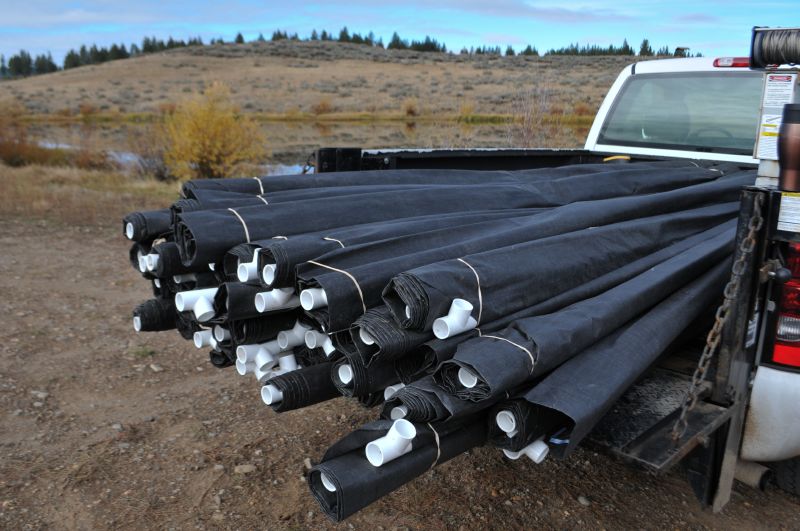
MARTIS CREEK LAKE, Calif. (Oct. 31, 2010) - Sunlight barriers await placement here Oct. 31 as part of a project to eradicate invasive Eurasian milfoil plants from the lake bottom. The gas-permeable barriers kill the milfoil plants by blocking sunlight, but don't disturb other plant and animal species native to the lake. The Corps is partnering with the Tahoe Divers Conservancy on the project, funded by a $20,000 grant from the Community Foundation of Western Nevada's Truckee River Fund.